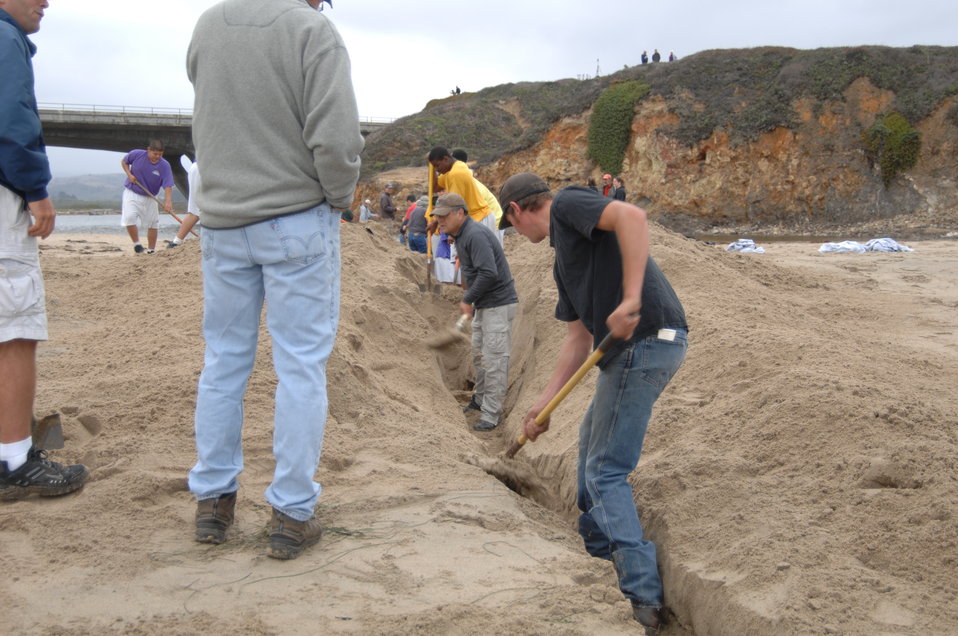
Pescadero Breach 8